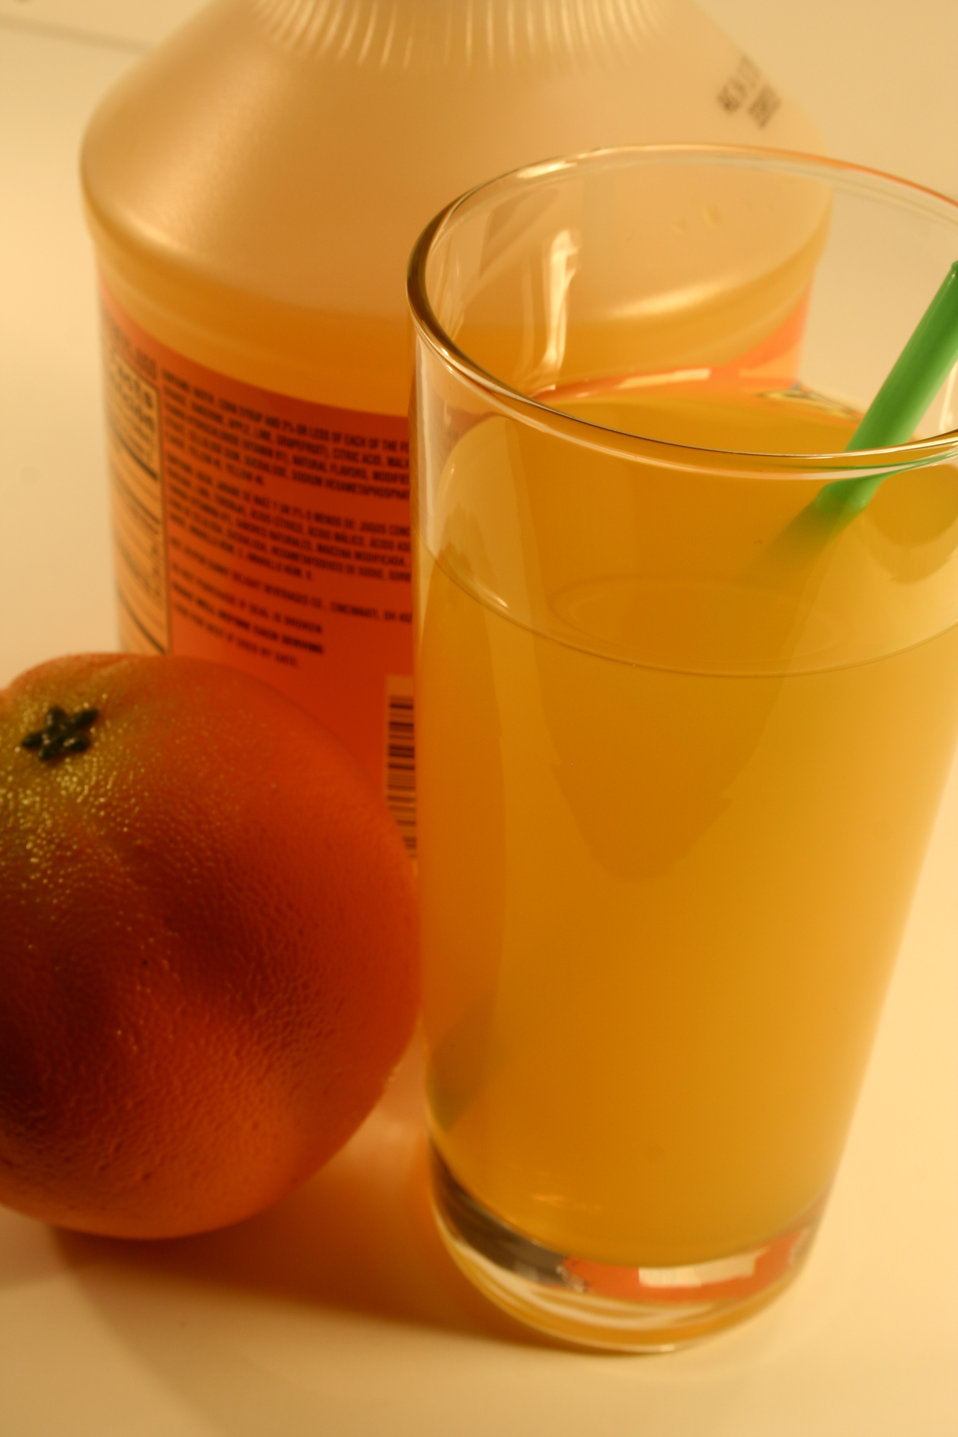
This image depicts a whole fresh orange, a glass of bright yellow orange juice with its green straw, and in the background, a half-gallon container of store-bought orange juice.